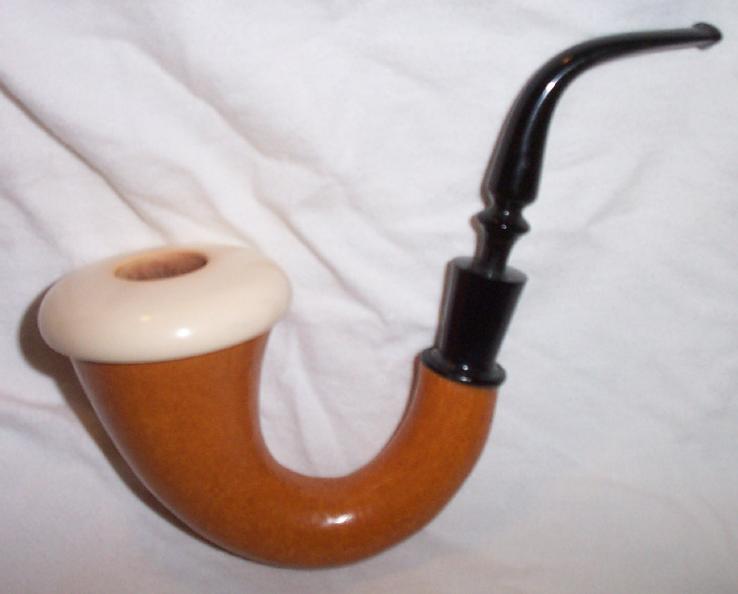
A picture of my calabash pipe.